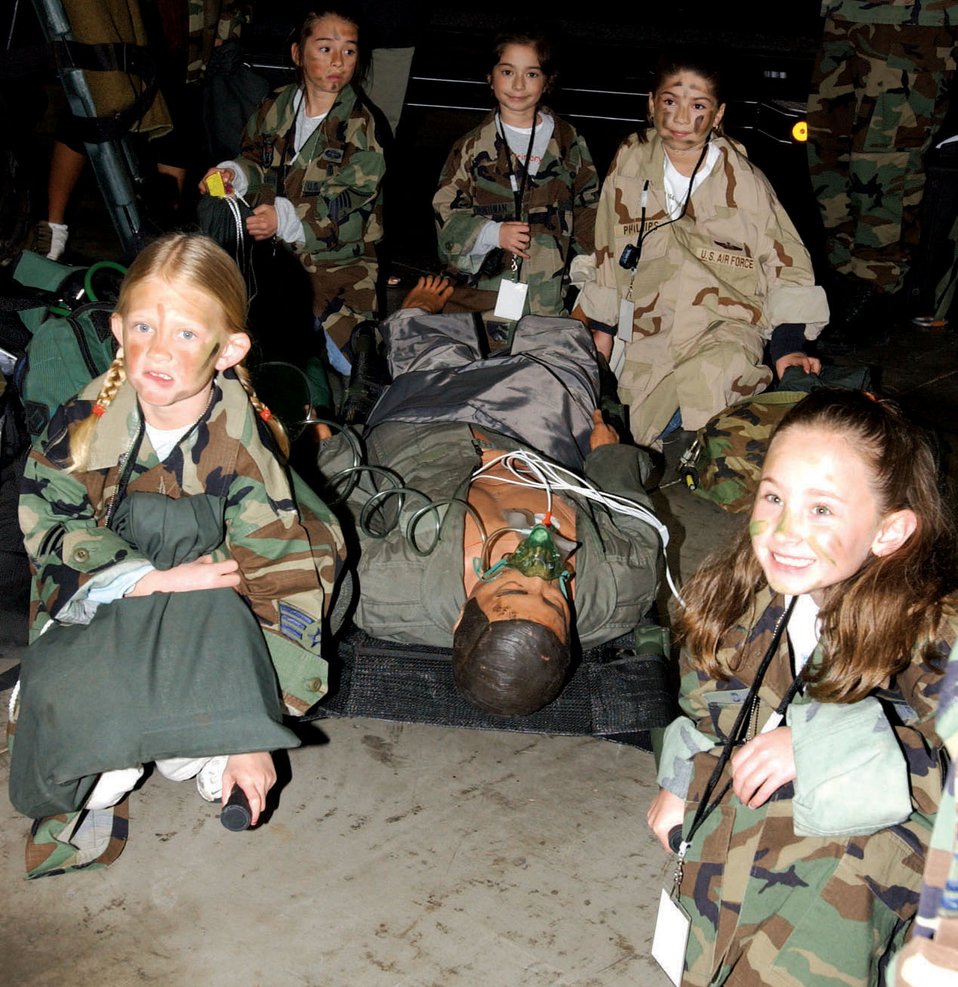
Kadena children get deployment experience

KADENA AIR BASE, Japan -- Children here prepare to carry a simulated casualty during an Operation Kids Understanding Deployment Operations event March 12. More than 320 children participated in the event to learn more about how their military parents deploy.